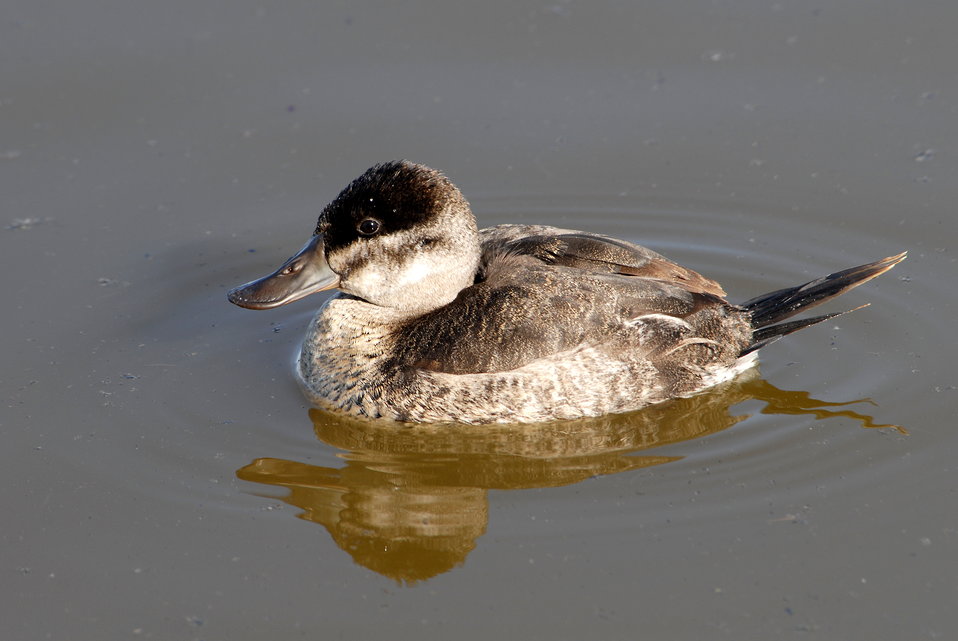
Ruddy Duck (female)